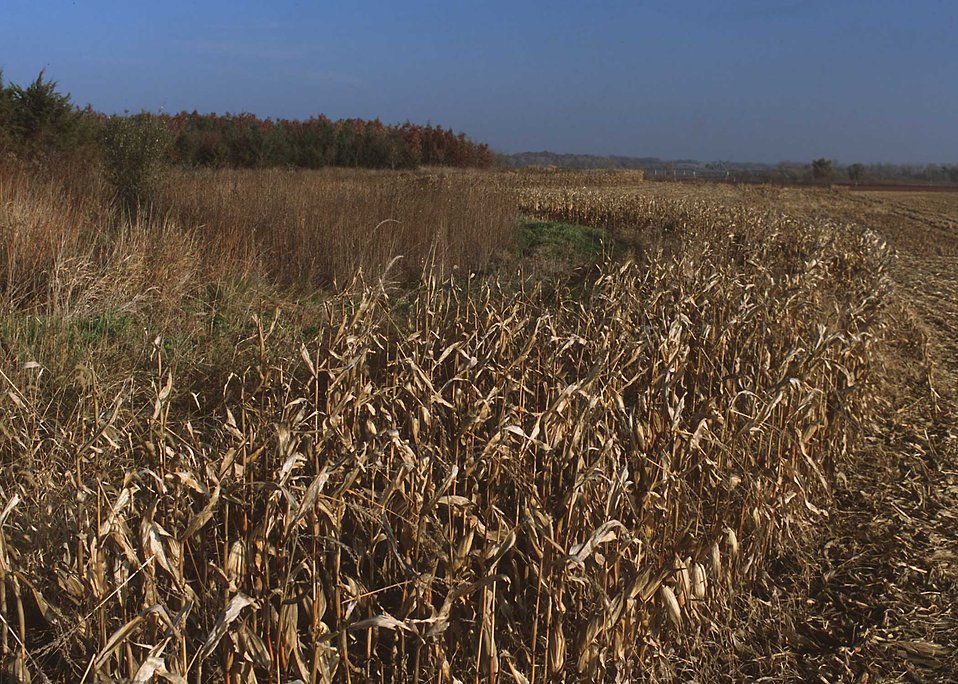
Leaving a few rows of unharvested corn or other grain near good wildlife cover adds to habitat for a number of species of wildlife.